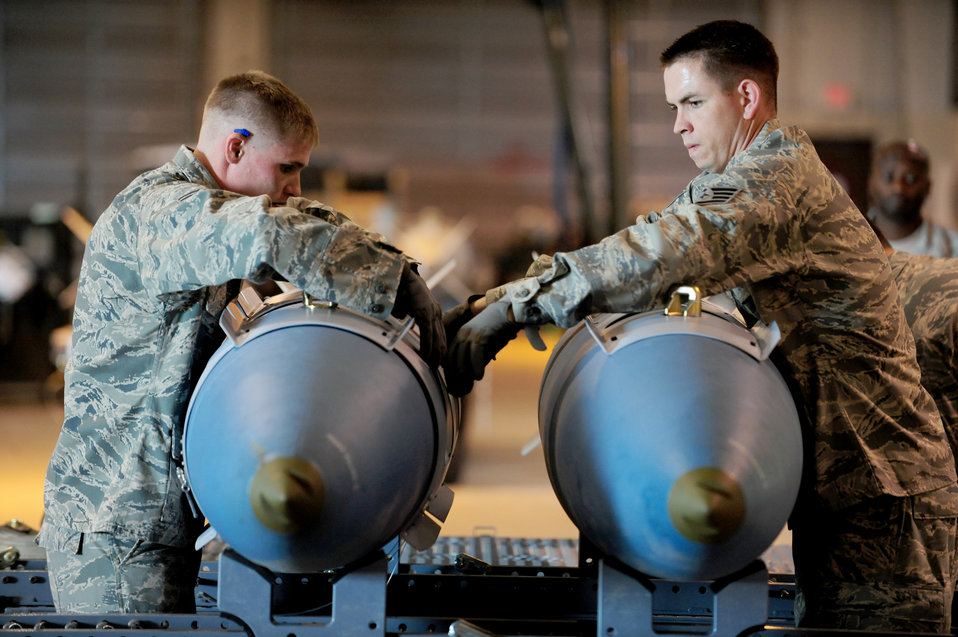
Global Strike Challenge

Senior Airman Joshua Price (Left) and Staff Sgt. Darrell Rinde help build two training bombs during Global Strike Challenge, June 9, 2010, at Ellsworth Air Force Base, S.D. The 28th Bomb Wing is one of seven bomb wings to participate in Air Force Global Strike Command's first load competition. Airman Price and Sergeant Rinde are 28th Munitions Squadron bomb build team members.